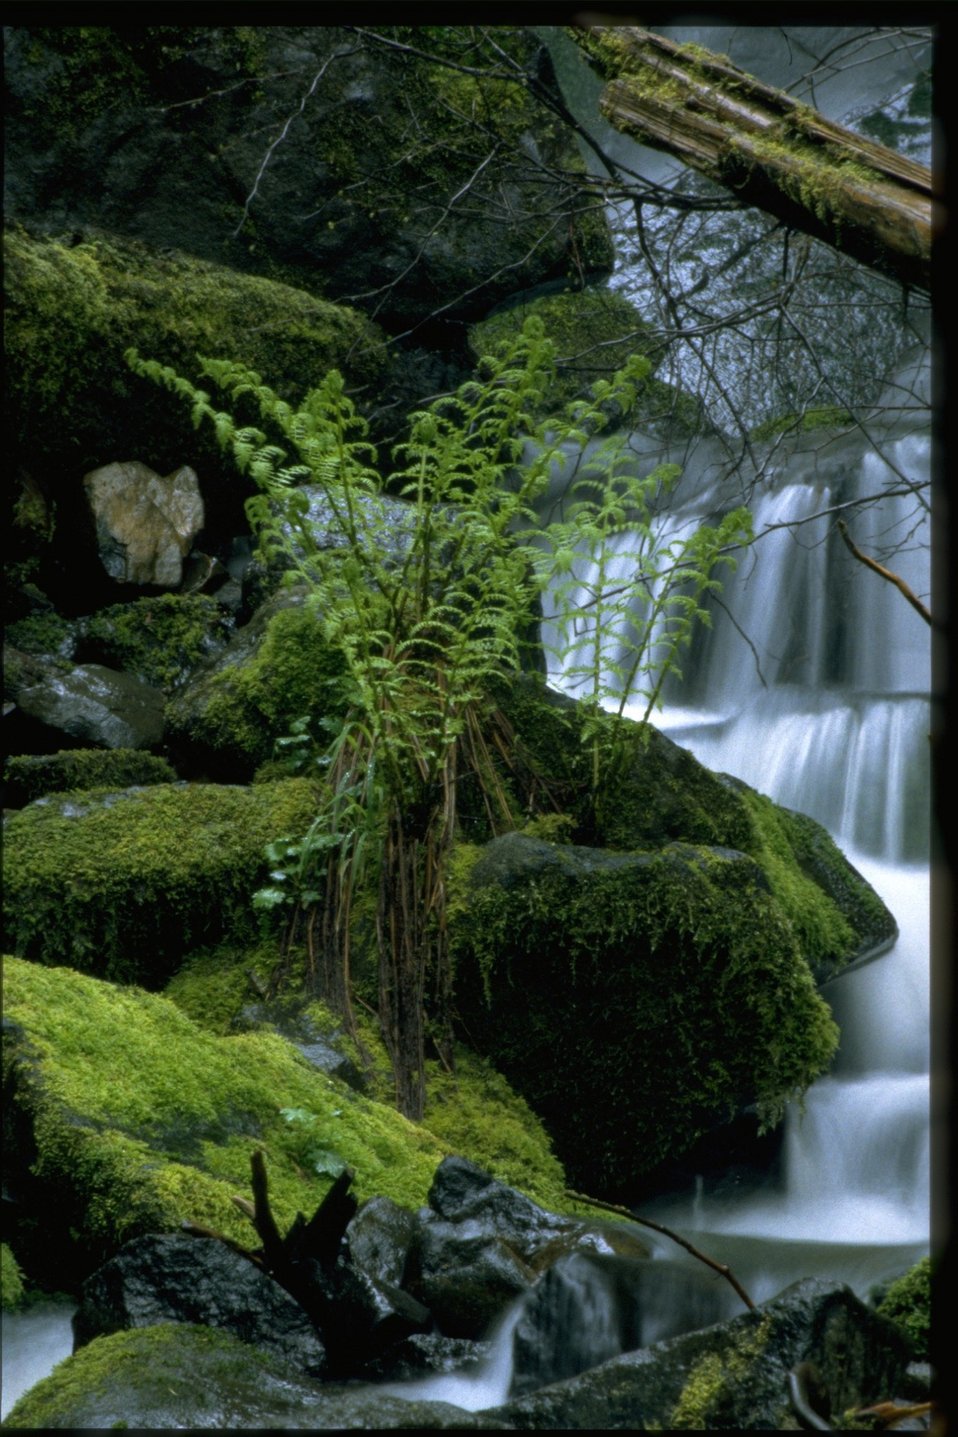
Swiftwater stream.